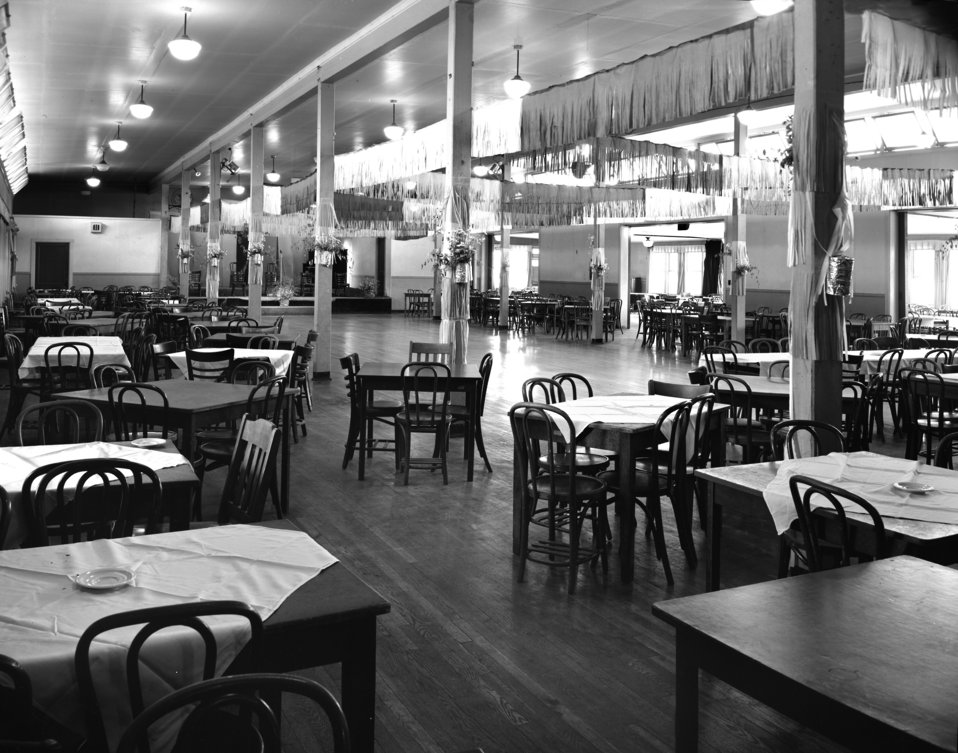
Grove Hall Interior Oak Ridge 1948

4546-12 DOE photo Ed Westcott 5-24-1948 Oak Ridge Tennessee